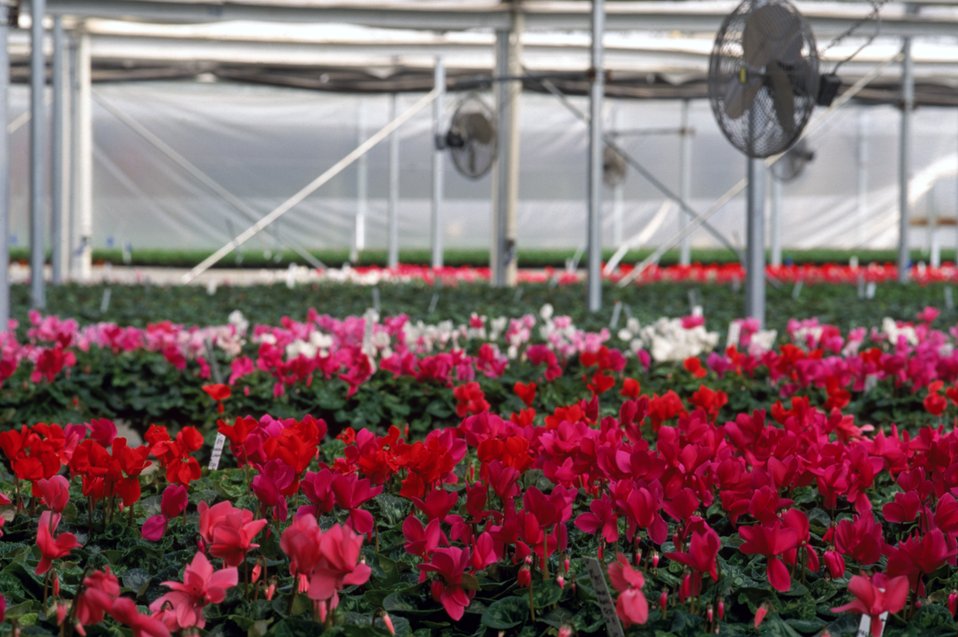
THE MASSON RADIUM SPRINGS FARMS GEOTHERMAL GREENHOUSE IS LOCATED ON PRIVATE LAND IN SOUTHERN NEW MEXICO. THE GREENHOUSE SPACE IS HEATED BY GEOTHERMAL ENERGY FROM THREE WELLS.